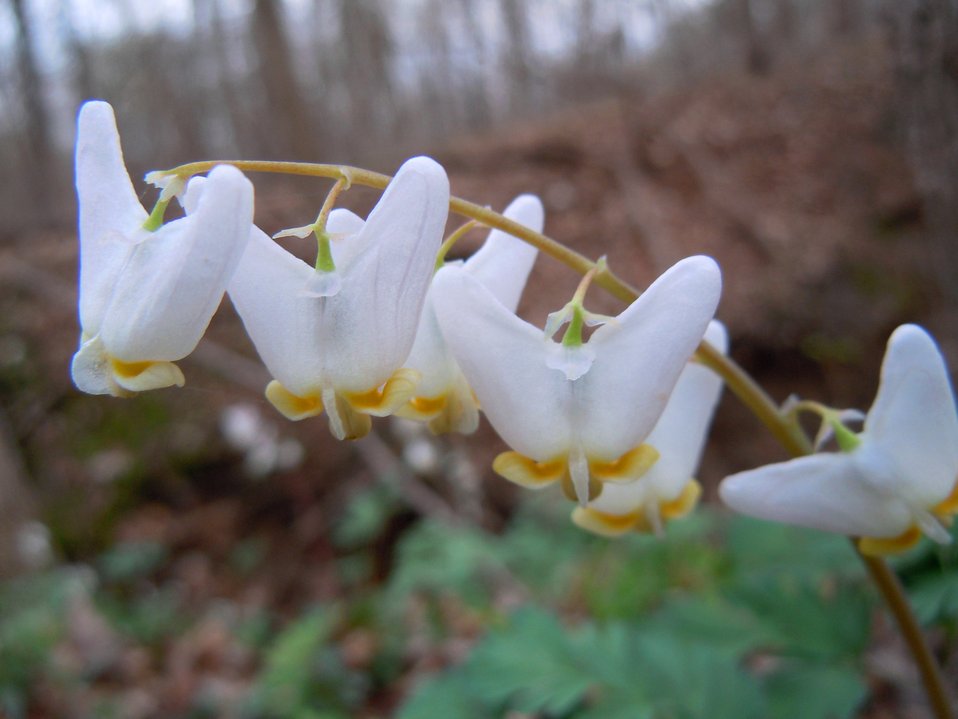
Dutchmans Breeches